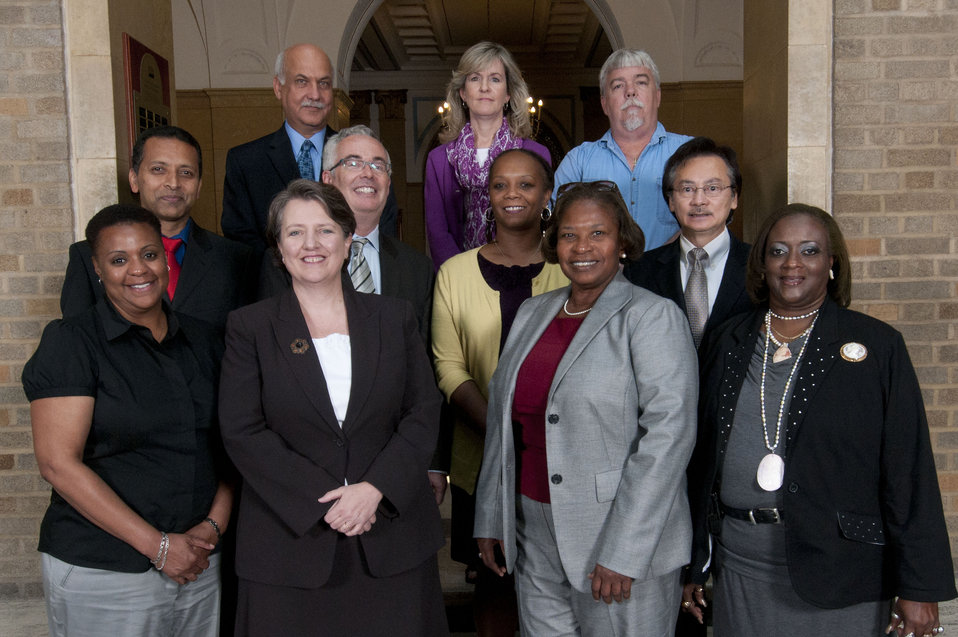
South Building Modernization Team, Departmental Management, Washington, DC. Valencia M. Winstead, Group Leader. For leading the completion of the renovation of the Wing 5 to provide a safer, healthier, accessible, energy efficient, and modern work environment for USDA employees.
On September 14, 2011 in the patio of the Whitten Building Patio of the US Department of Agriculture in Washington, DC.